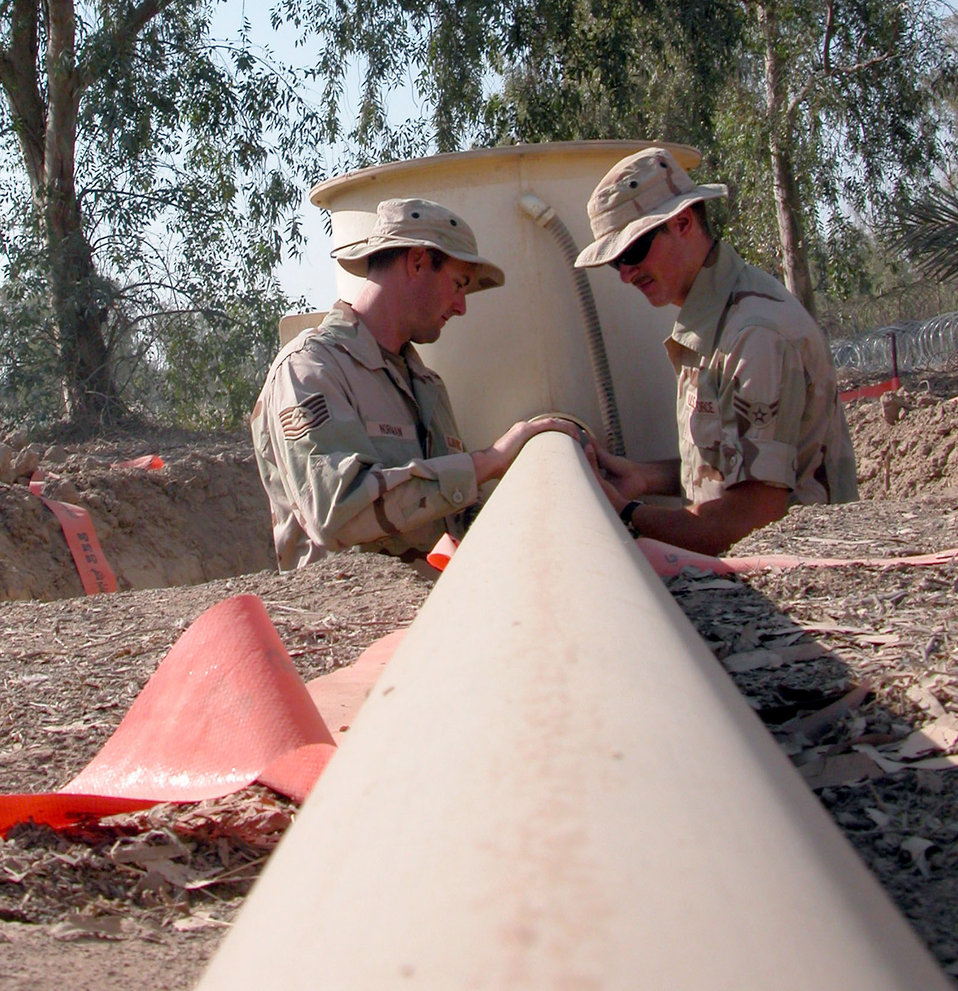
Going with the flow

OPERATION IRAQI FREEDOM (AFPN) -- Tech Sgt. Richard Norman (left), and Airman 1st Class Kevin Dougherty adjust a waste water pipe from bathroom units at Baghdad International Airport. The airmen are deployed from the 355th Civil Engineer Squadron at Davis-Monthan Air Force Base, Ariz. CE teams have erected more than 132 tents and multiple shower and shave units at the airport.